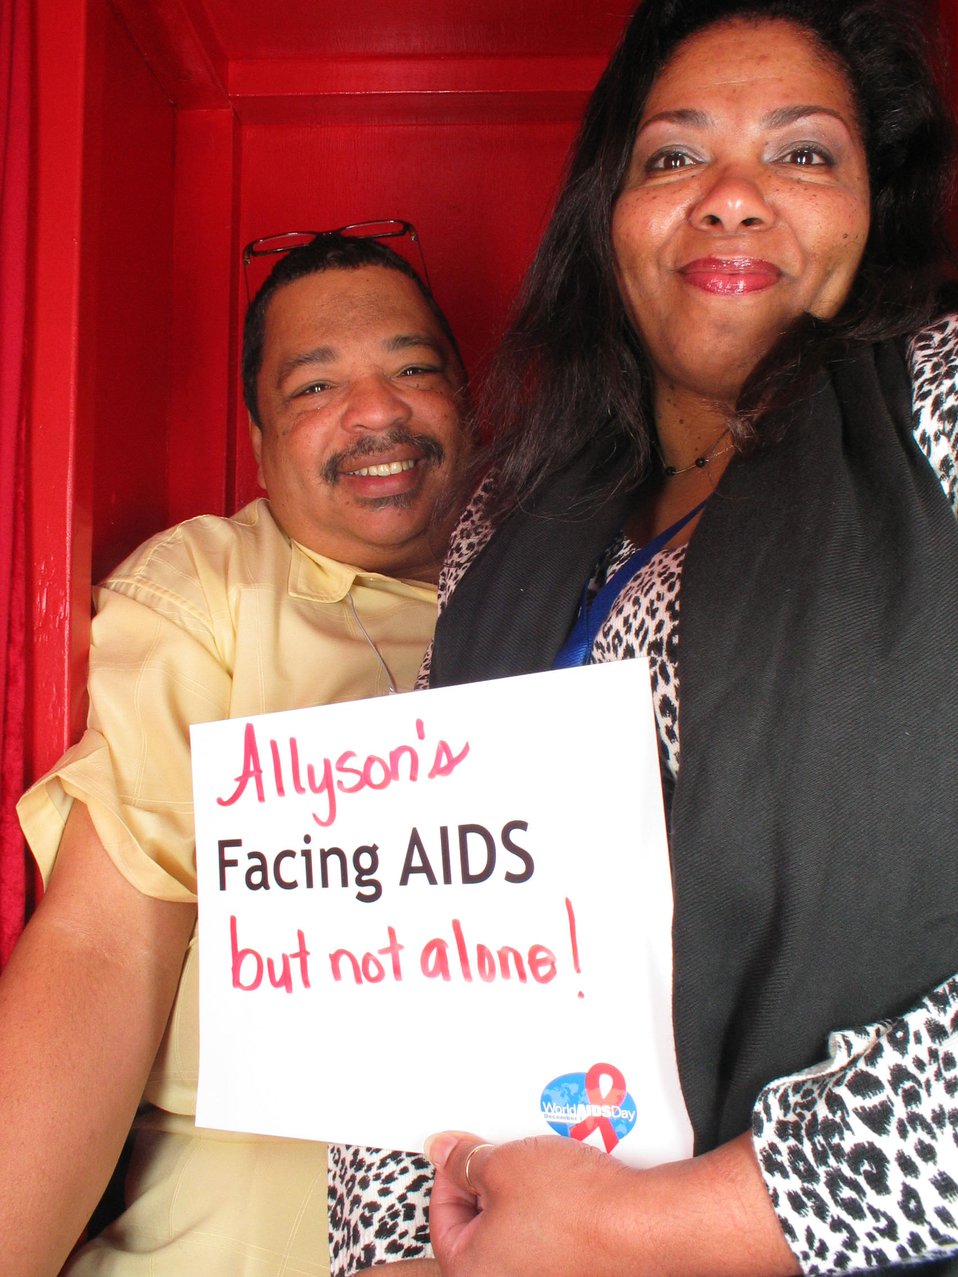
Allyson's Facing AIDS but not alone!